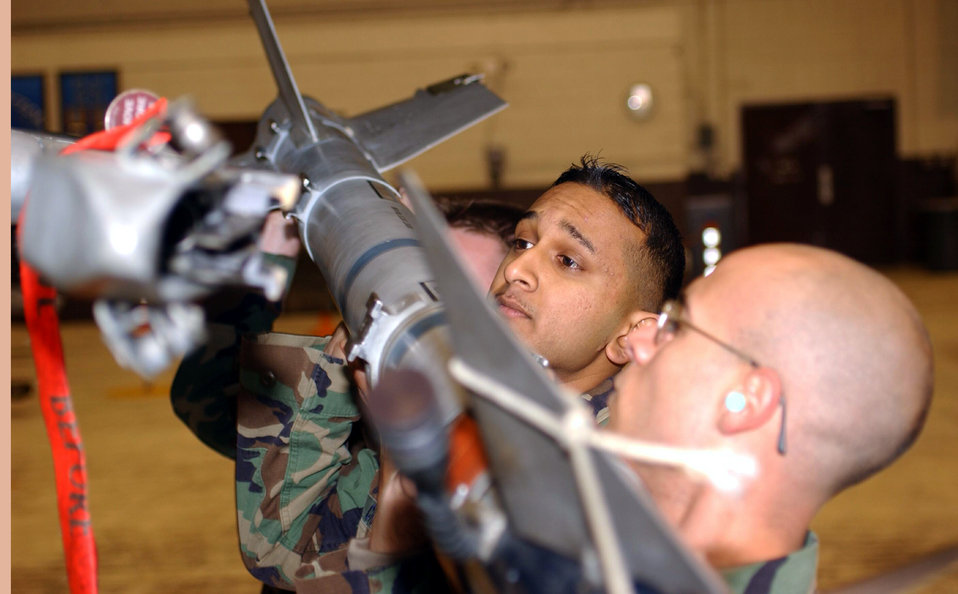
A lot of loading

OSAN AIR BASE, South Korea -- (From front) Senior Airman Jose Rivera, Senior Airman Nilesh Chand and Staff Sgt. Dylan Hofert lift a 250-pound AIM-9 Sidewinder missile onto an F-16 Fighting Falcon here recently. The Airmen are assigned to the 51st Aircraft Maintenance Squadron.